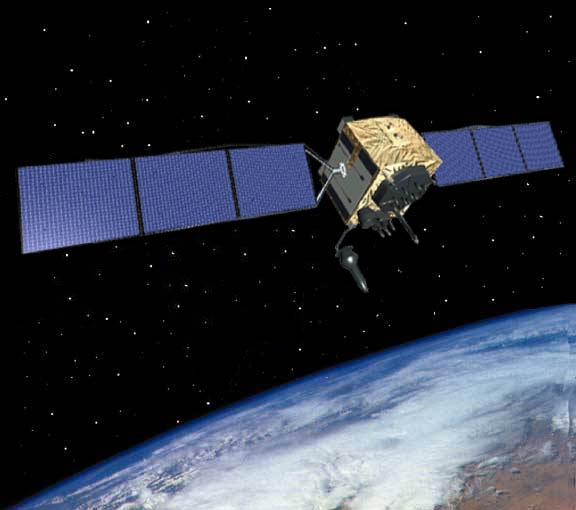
GPS IFF satellite

The Global Positioning System IIF satellite, developed and built by Boeing, is the next generation of GPS space vehicle.